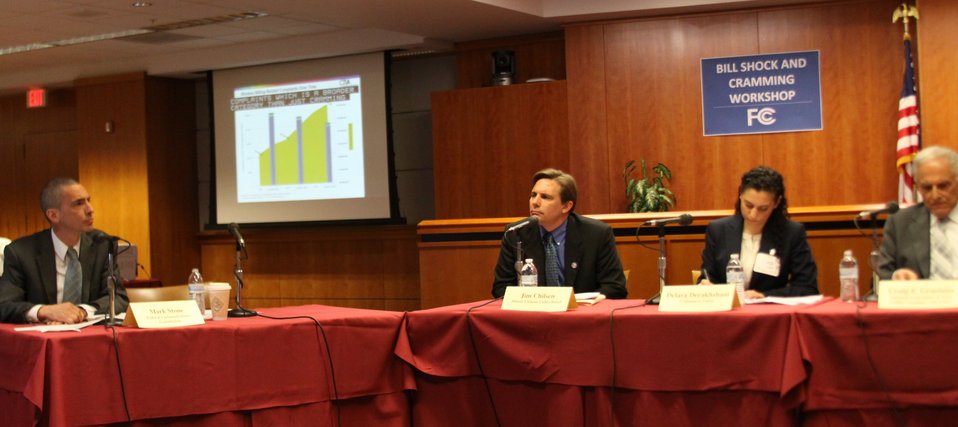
April 17, 2013 Bill Shock and Cramming Workshop